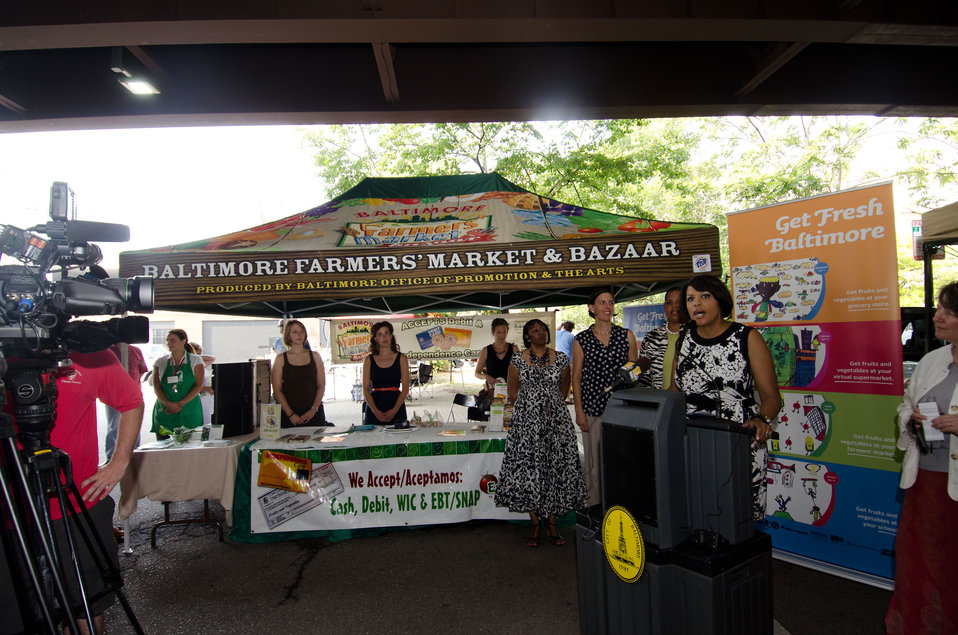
Baltimore Mayor Stephanie Rawlings-Blake (at podium) and Agriculture Deputy Secretary Kathleen Merrigan (right) help launch Baltimore’s Farmers Market and Bazaar use of the U.S. Department of Agriculture’s (USDA) Food Nutrition Service’s (FNS) Supplemental Nutrition Assistance Program (SNAP) Electronic Benefits Transfer (EBT) cards, Baltimore Bucks, and debit card utilizing a wireless connection in Baltimore, MD on Sunday, July 8, 2012. The U.S. Department of Agriculture, Kaiser Permanente of the Mid-Atlantic States, Abell Foundation, the Harry and Jeanette Weinberg Foundation, the Baltimore Community Foundation, Maryland Hunger Solutions, the Maryland Department of Agriculture Baltimore Office of Promotions and the Arts, and Department of Social Services are participating partners in the farmers market.